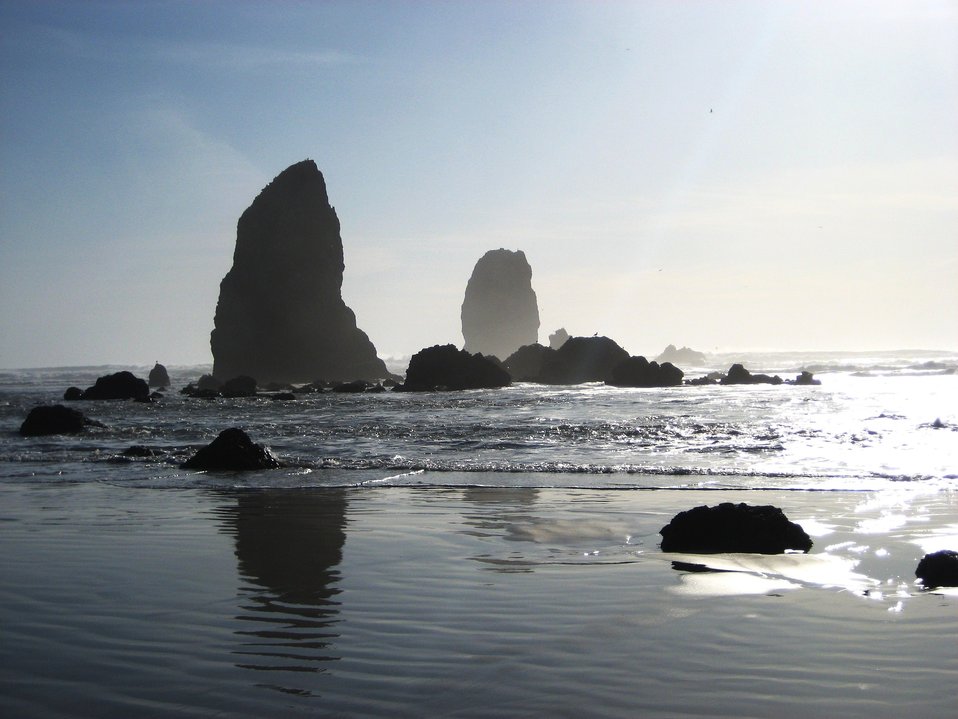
Sea stacks, surf, and sun. Ripples and reflections in the late afternoon. The remnants of a continent march into the sea.